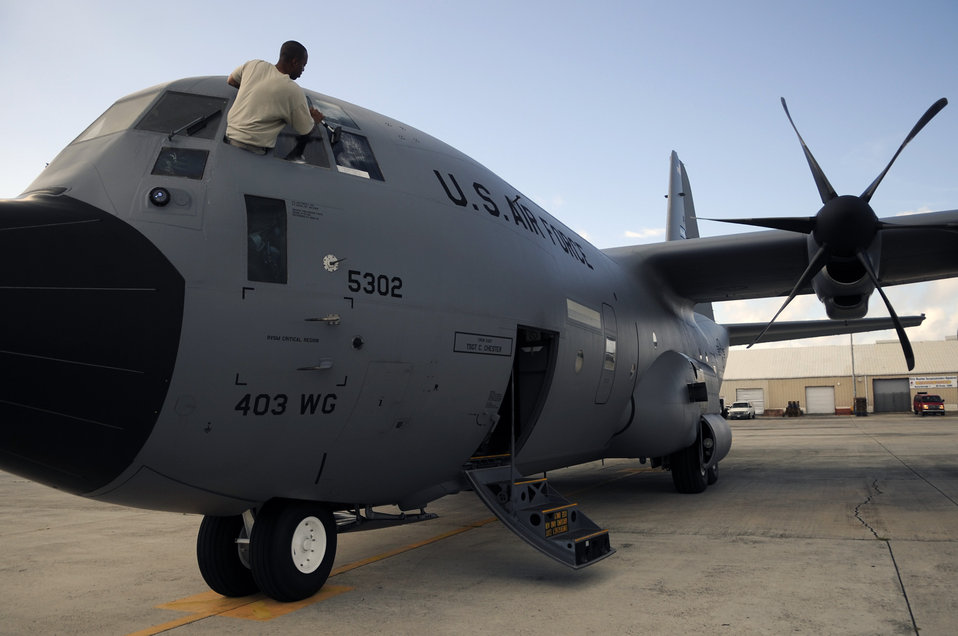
Airmen prep for upcoming hurricane season

Staff Sgt. Karon Evans washes the flight deck windows on a Hurricane Hunter WC-130J Hercules before a training mission leaving St. Croix, V.I. Sergeant Evans is a crew chief assigned to the 403rd Wing from Keesler Air Force Base, Miss. The training mission covered the Air Force Reserve Command's weather reconnaissance mission.